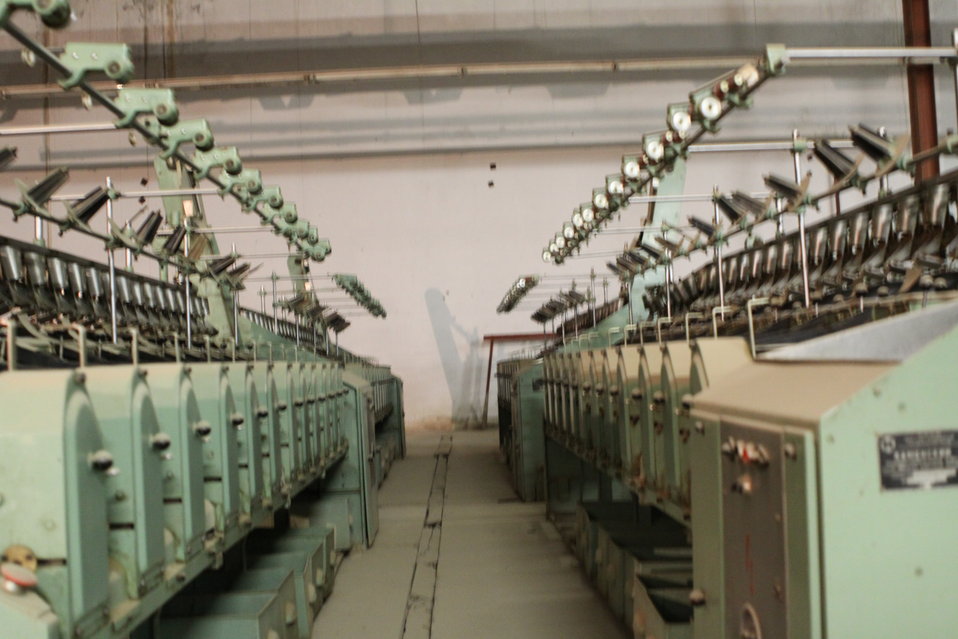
100525 Hirat Textile Company 733